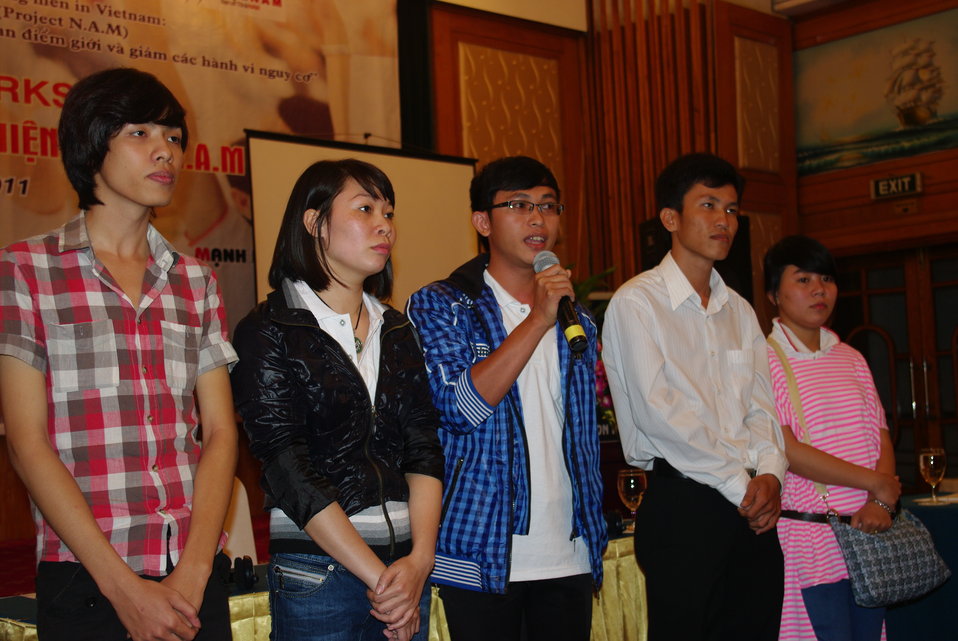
USAID Supports HIV Awareness among Street Youth and Young Men

Trainers and peer educators tell their stories on November 29, 2011, in Hanoi, Vietnam